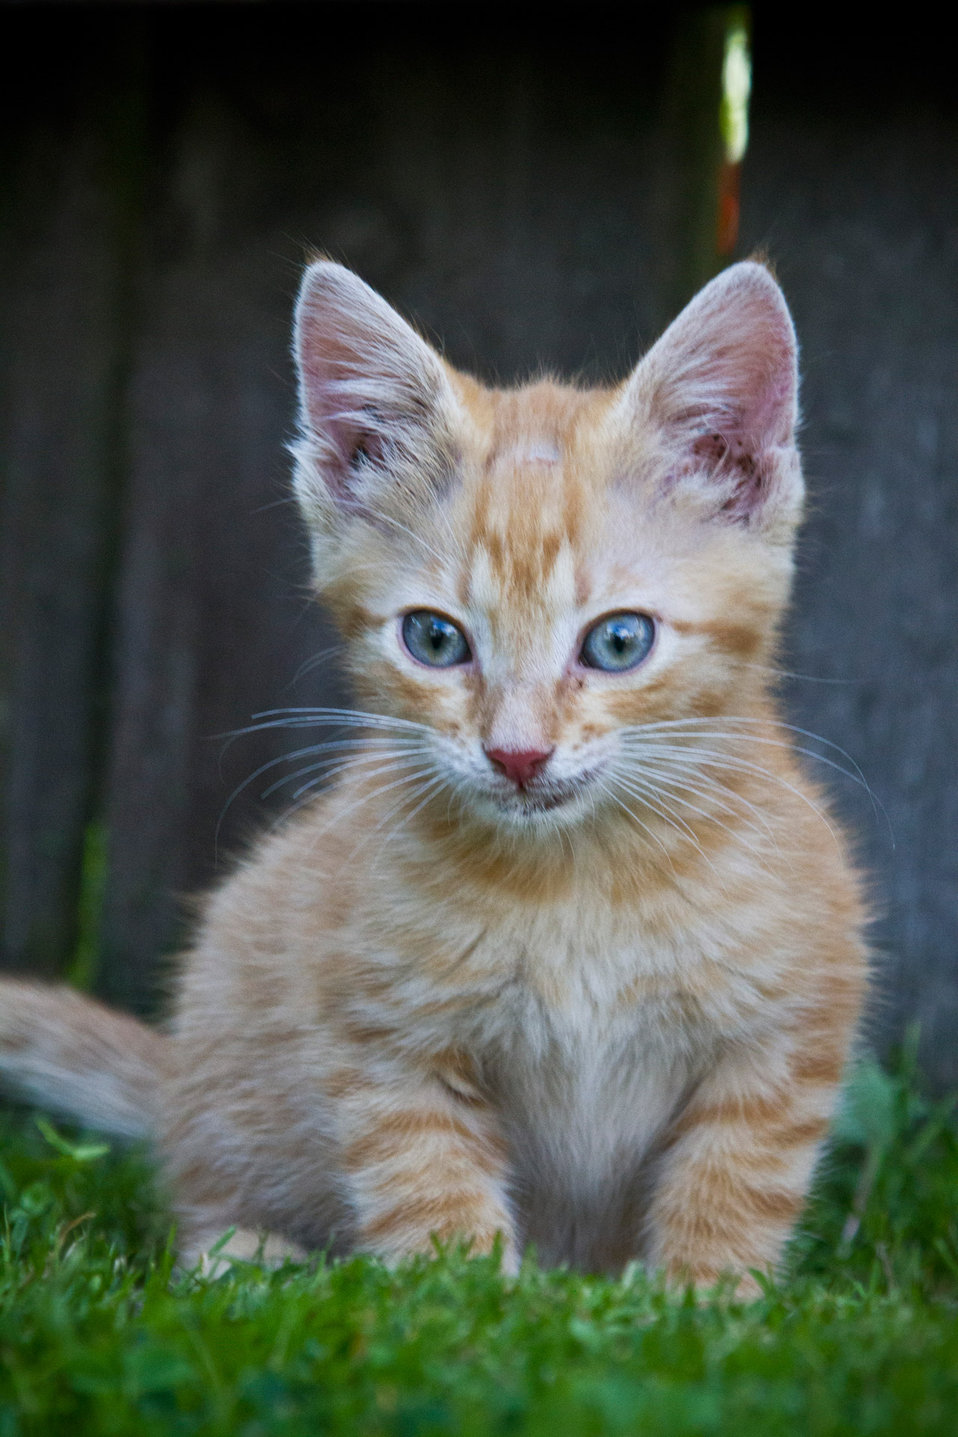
Kitten

Small kitten.